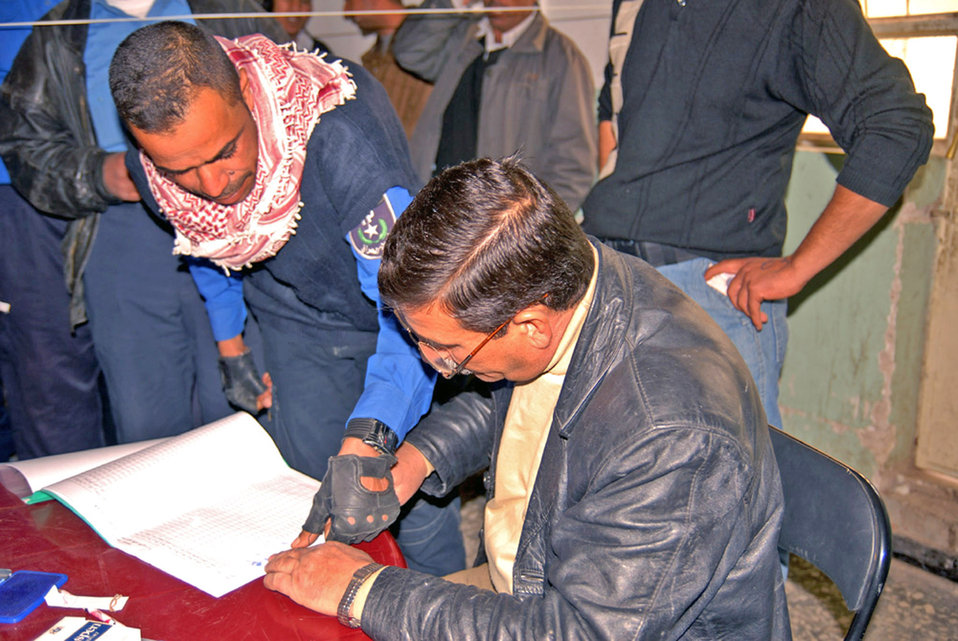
Coalition Forces assist in Iraqi police pay day

An officer from the Hy al Amil Iraqi Police Station places his fingerprint on a pay form after receiving his monthly pay and injury compensation wage Jan. 30 at the Joint Security Station Black Lion in Baghdad, Iraq. Nearly two hundred Iraqi police officers receive their monthly pay with the help of U.S. expeditionary security forces members.